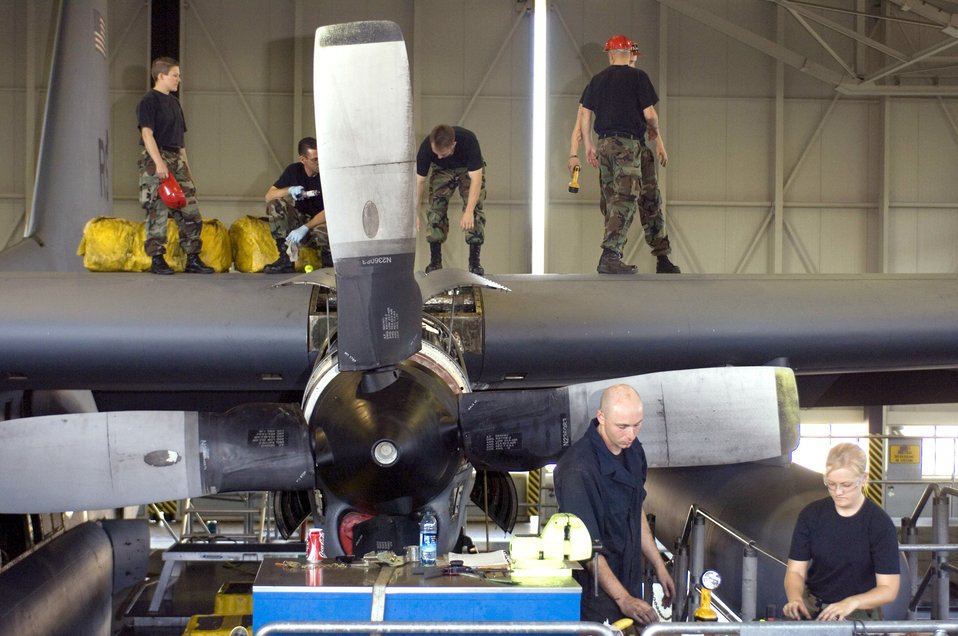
Isochronical inspection

More than 50 crew chiefs, mechanics, electricians and structural specialists from Ramstein's 86th Maintenance Squadron conduct an isochronical inspection on a C-130 Hercules at Ramstein Air Base, Germany, on July 18.